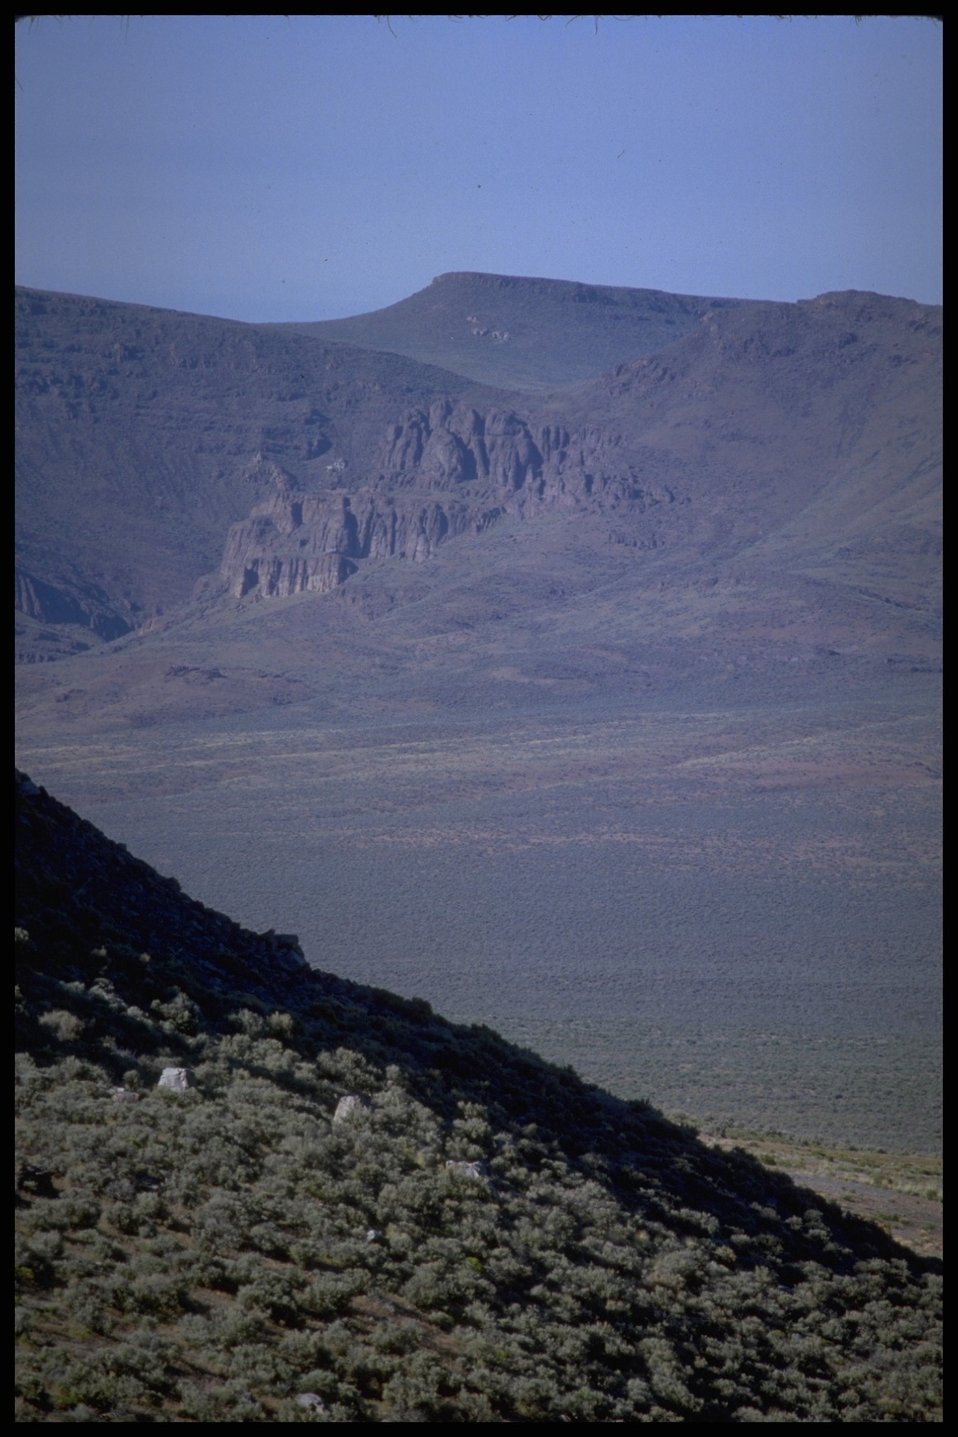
Golden Eagle Area, Lakeview District.